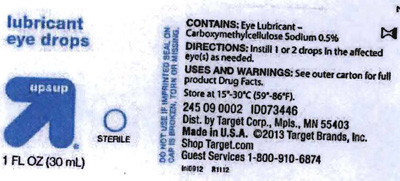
RECALLED – Lubricant Eye Drops, Carboxymethylcellulose Sodium 0.5% Ophthalmic Solution

September 6, 2013 – Product Recall – Altaire Pharmaceuticals, Inc. Issues Voluntary Nationwide Recall of 9 Lots of Carboxymethylcellulose Sodium 0.5% Ophthalmic Solution Sold Under Several Brands Because the Preservative May Not Be Effective Through Expiry.